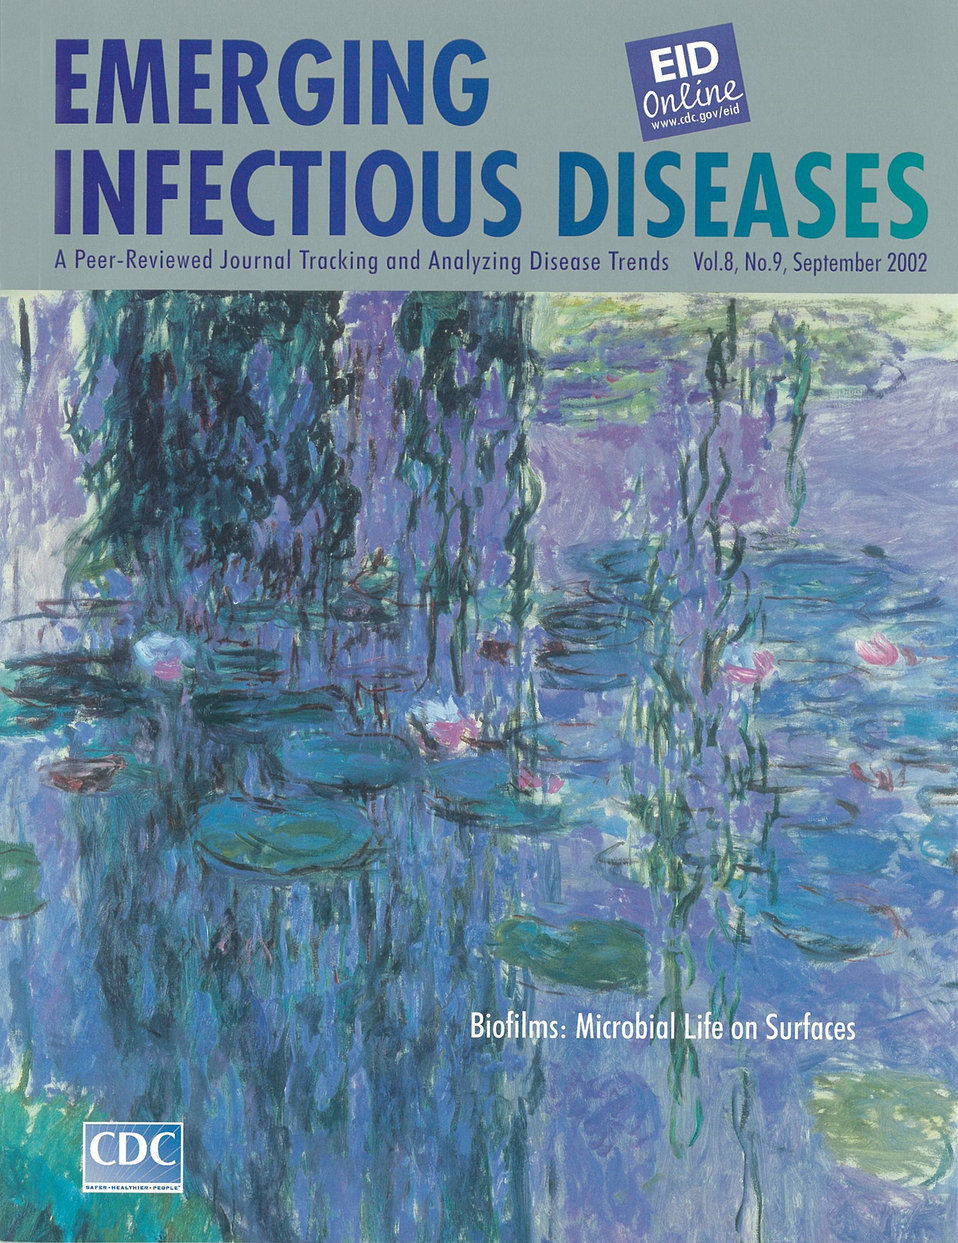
Emerging Infectious Diseases (EID) cover artwork for Volume 8, Number 9, September 2002 issue.